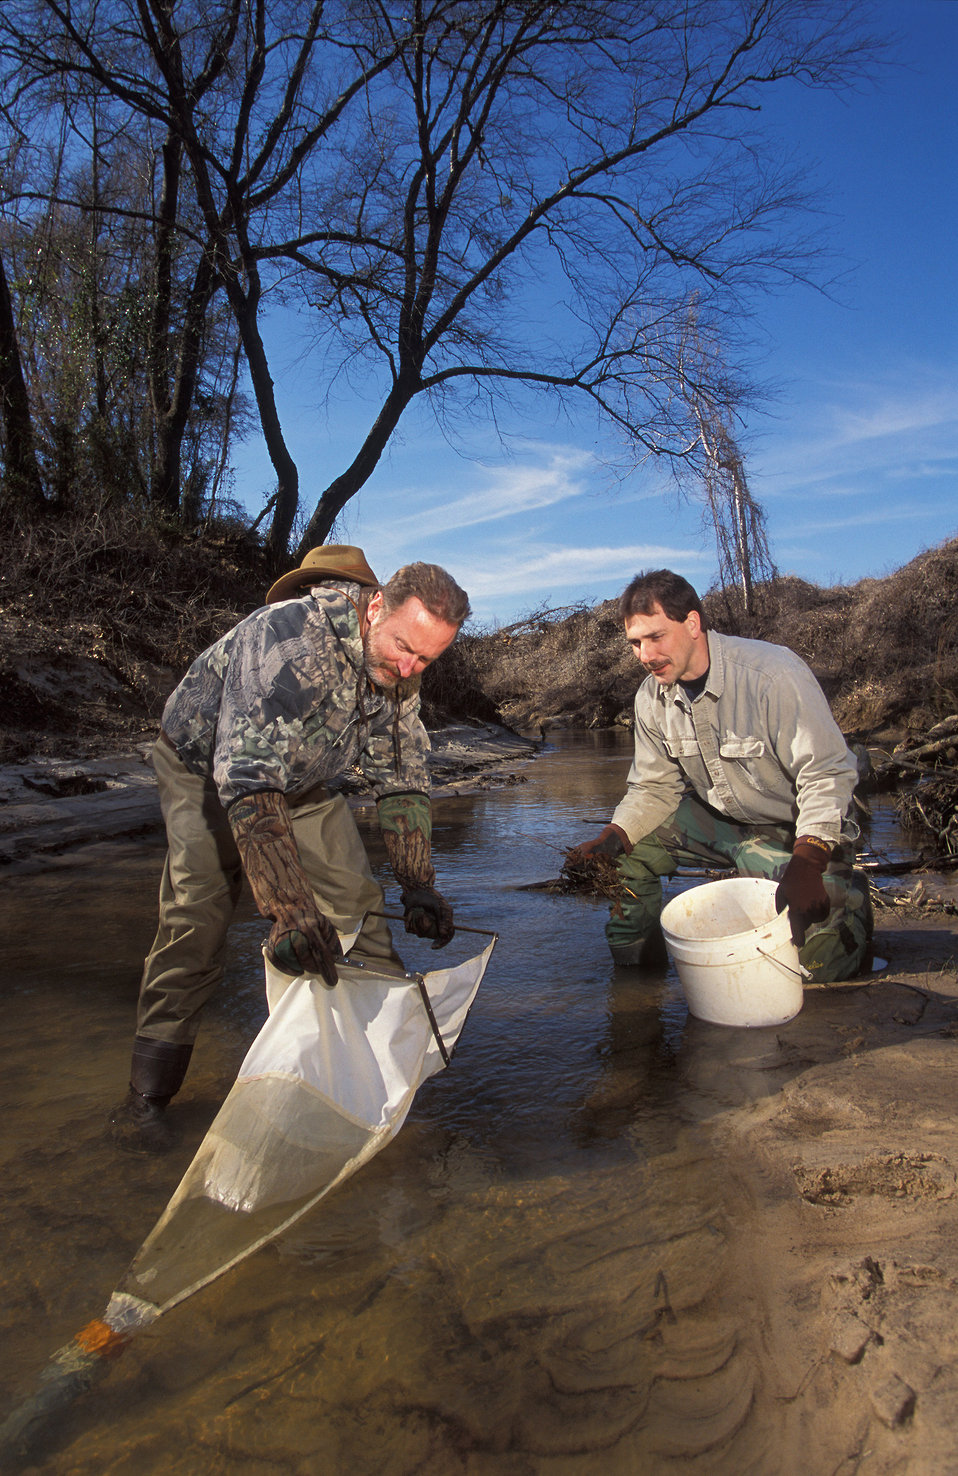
The rich diversity and short life cycles of macroinvertebrates collected in this Mississippi creek by U.S. Department of Agriculture (USDA) Agricultural Research Service (ARS) biologists Charles Bryant and Sam Testa are very useful in assessing environmental effects of stream restoration techniques.